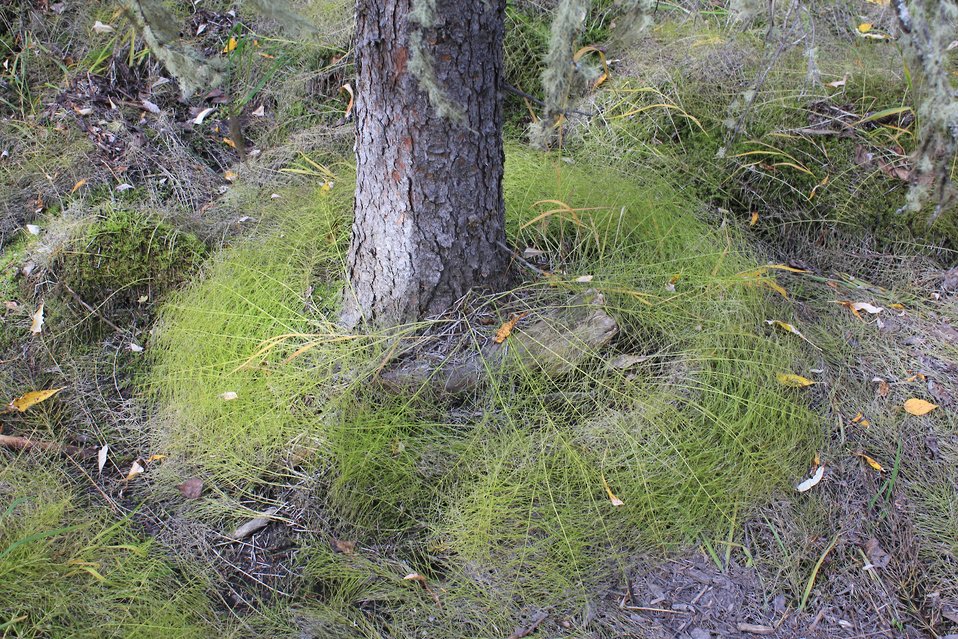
Strange fern configuration around base of white spruce tree.